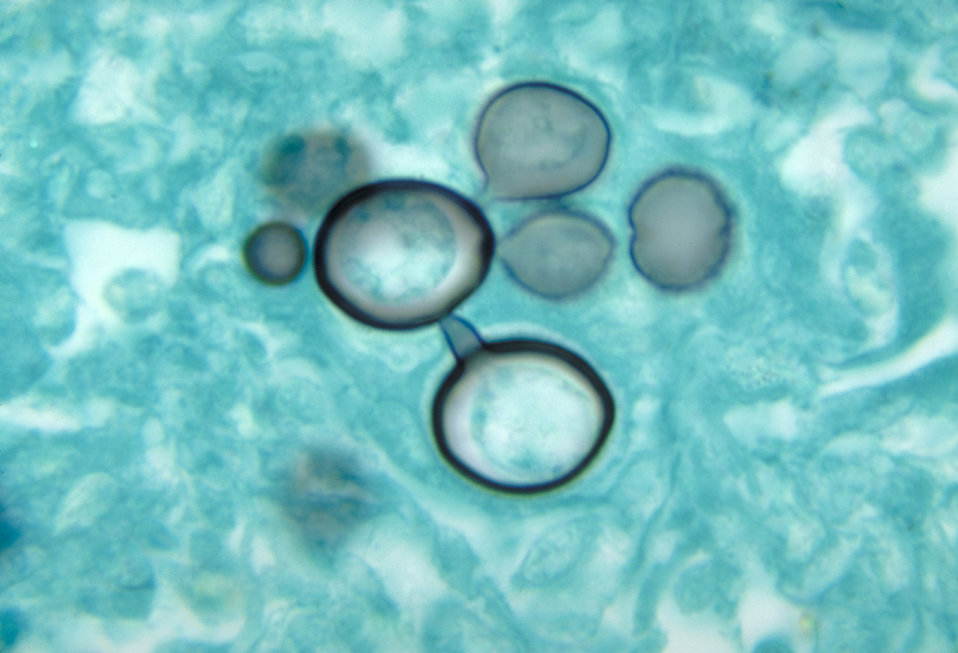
Histopathology of paracoccidioidomycosis.